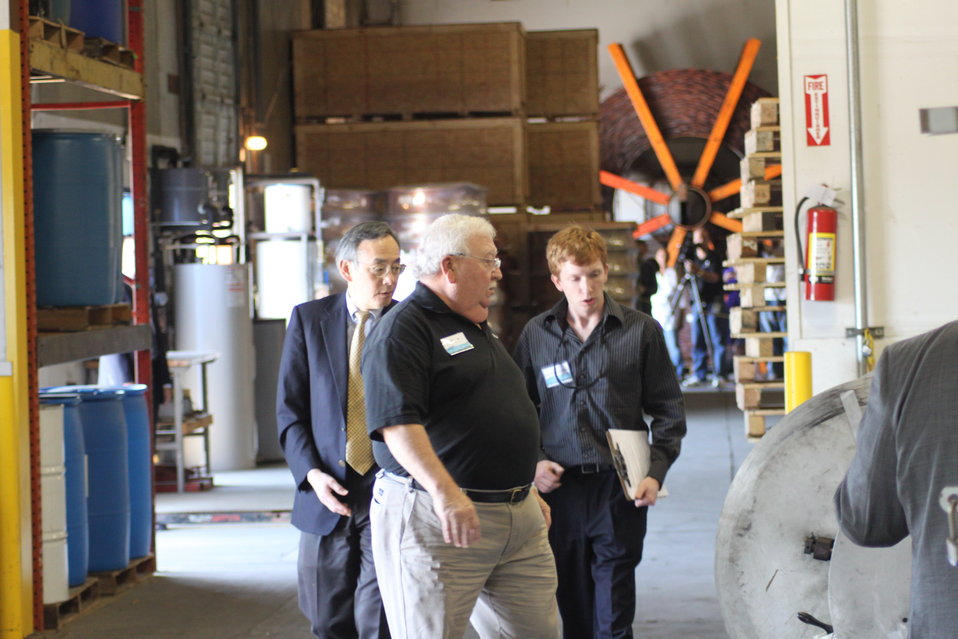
Norm 011